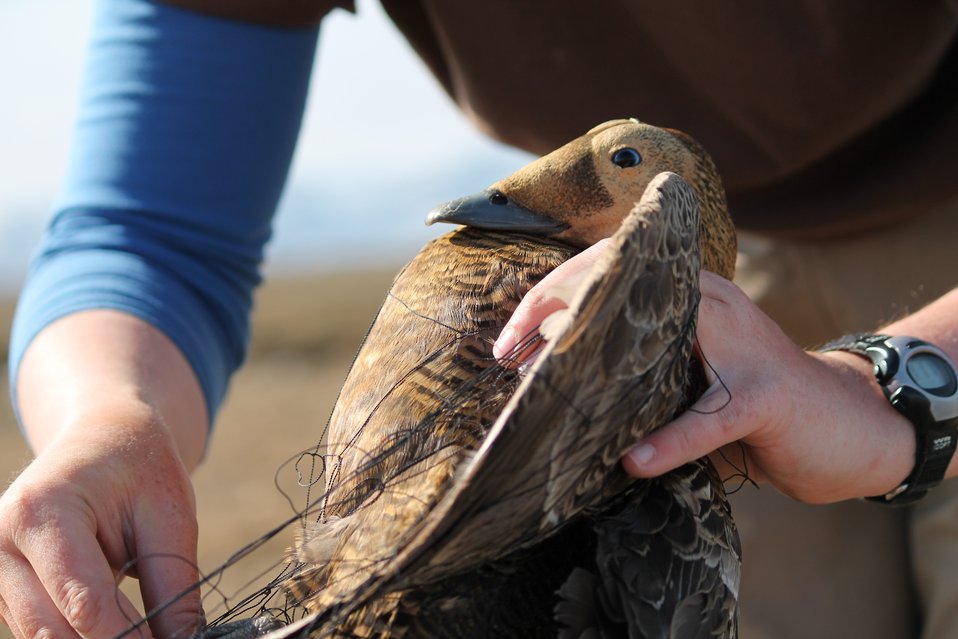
Trapped Spectacled Eider Female

This spectacled eider female was trapped 3-4 days before its estimated hatch date. Morphological measurements were recorded along with her weight. She was banded with a USFWS metal band, uniquely coded tarsal band, and a uniquely coded nasal disc. These bands will help to identify her in subsequent years and will be used in analyzing adult female survival.

USFWS Yukon Delta NWR